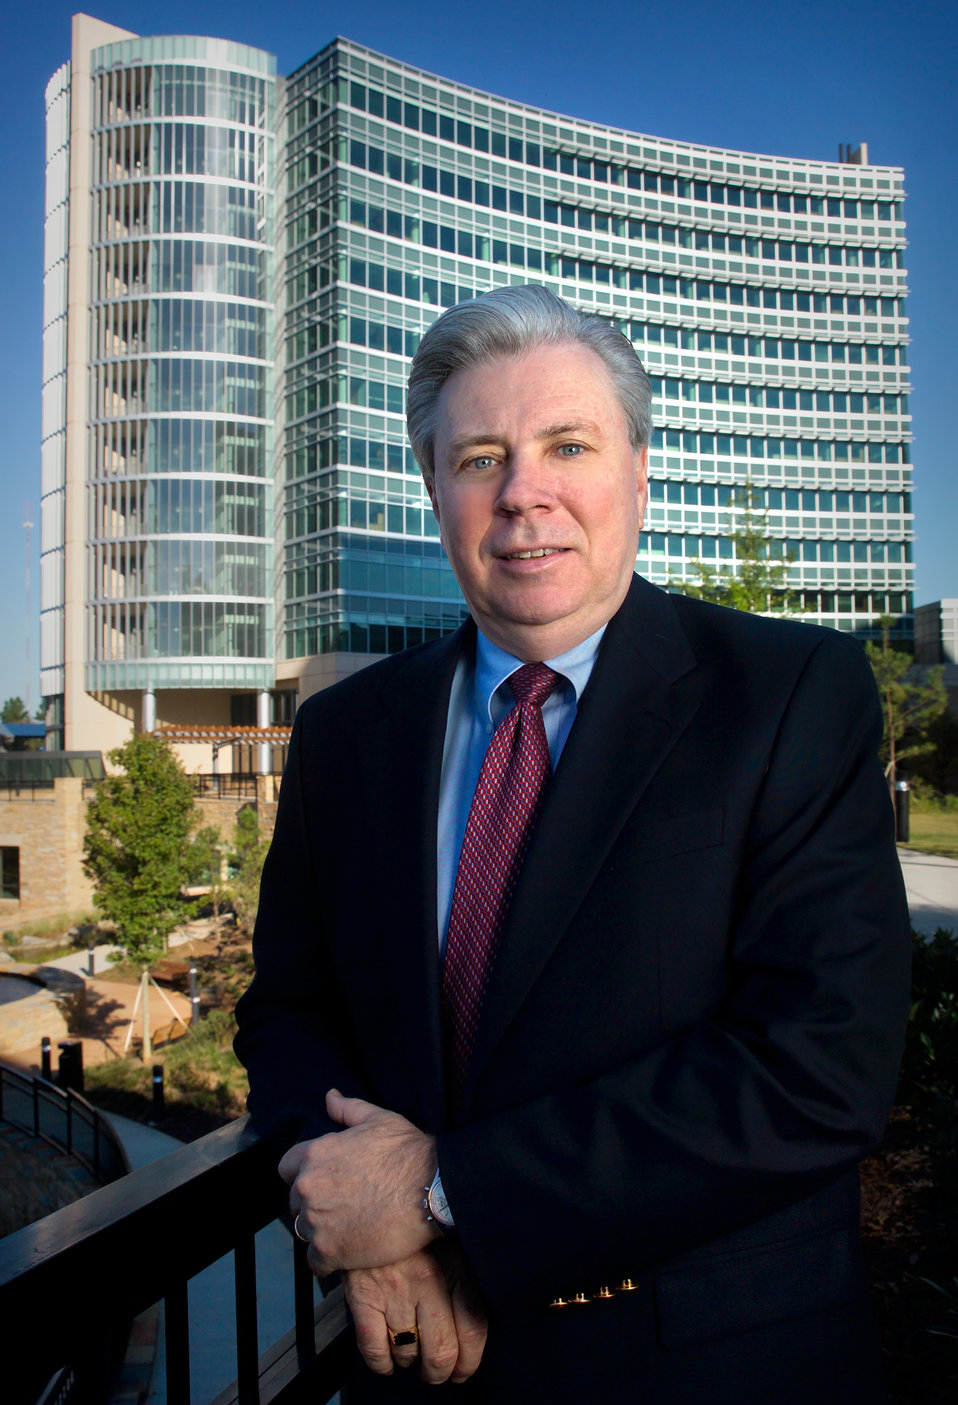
This 2005 photograph depicted Mr. Robert J. Delaney, who on October 13, 2005, was selected for the newly created position of Chief Management Officer (CMO), for the Centers for Disease Control's, Office of the Director.